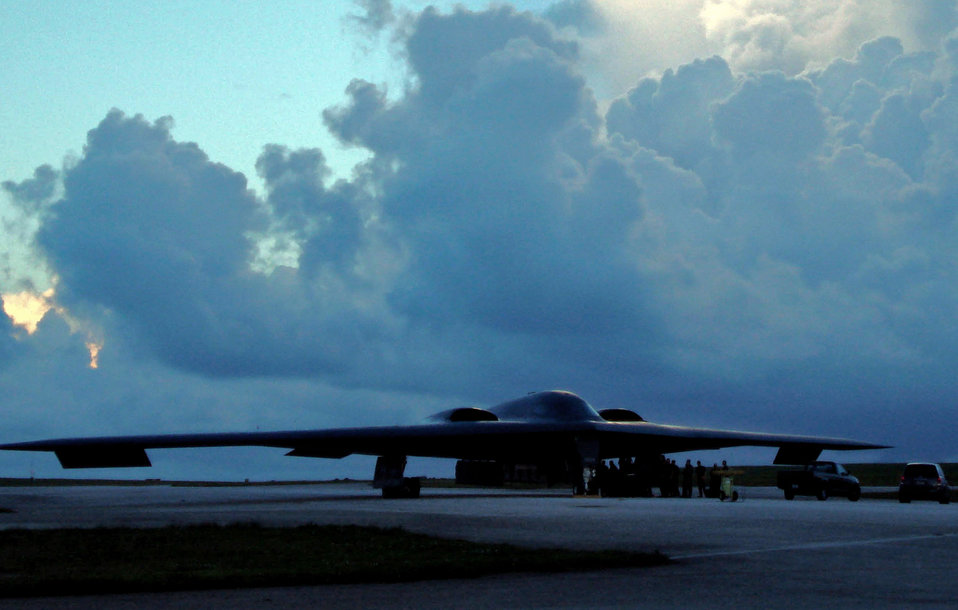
Always ready

A B-2 Spirit from Whiteman Air Force Base, Mo. is parked on the tarmac Oct. 8 at Andersen Air Force Base, Guam. The Spirit is a two-person bomber and is equipped with stealth technology. The B-2s are part of a continuous bomber presence in the Asia-Pacific region.